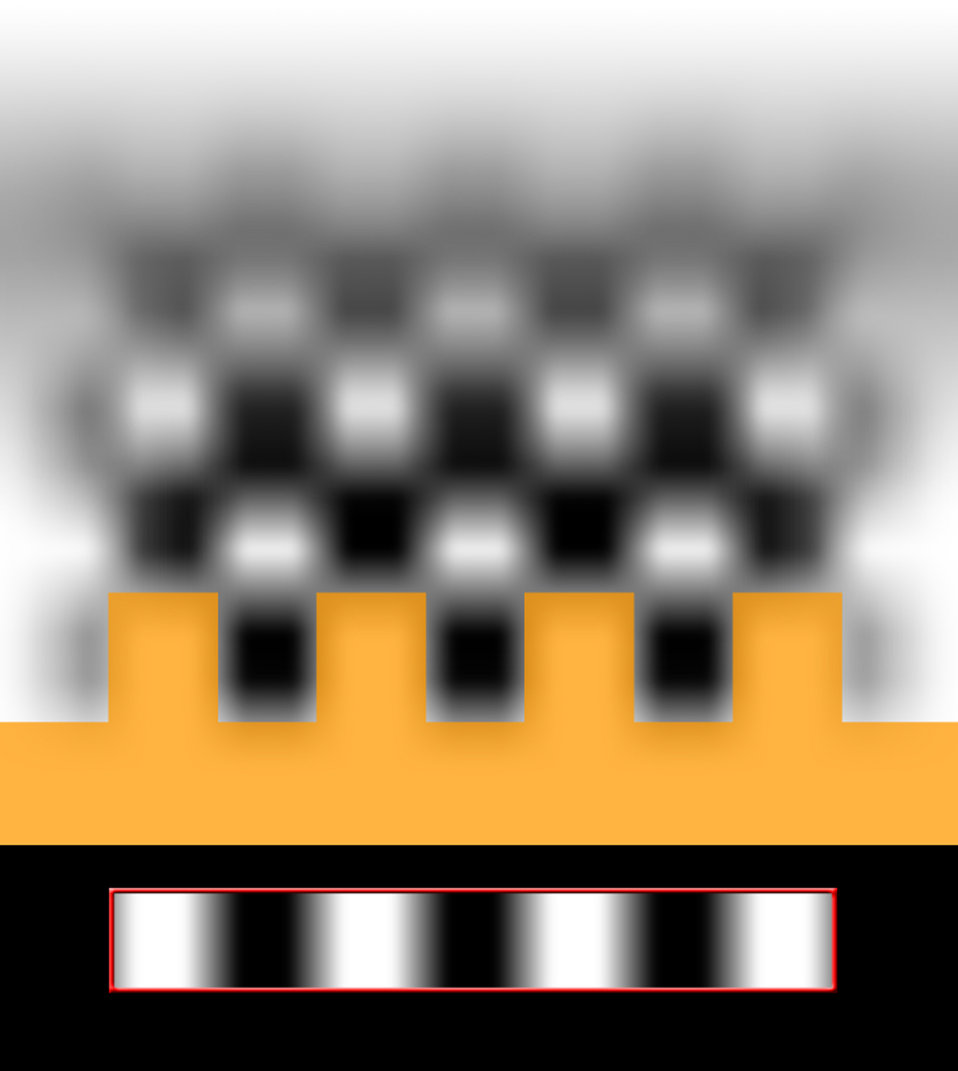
Checkerboard Scattering Pattern

Resembling a 3-D checkerboard, this mirage-like pattern was formed by light waves after bouncing off a specimen with a peak-and-valley arrangement of etched lines. Such complicated wave patterns, the result of light scattering and interference effects, may be used to discern the dimensions of nanoscale features.